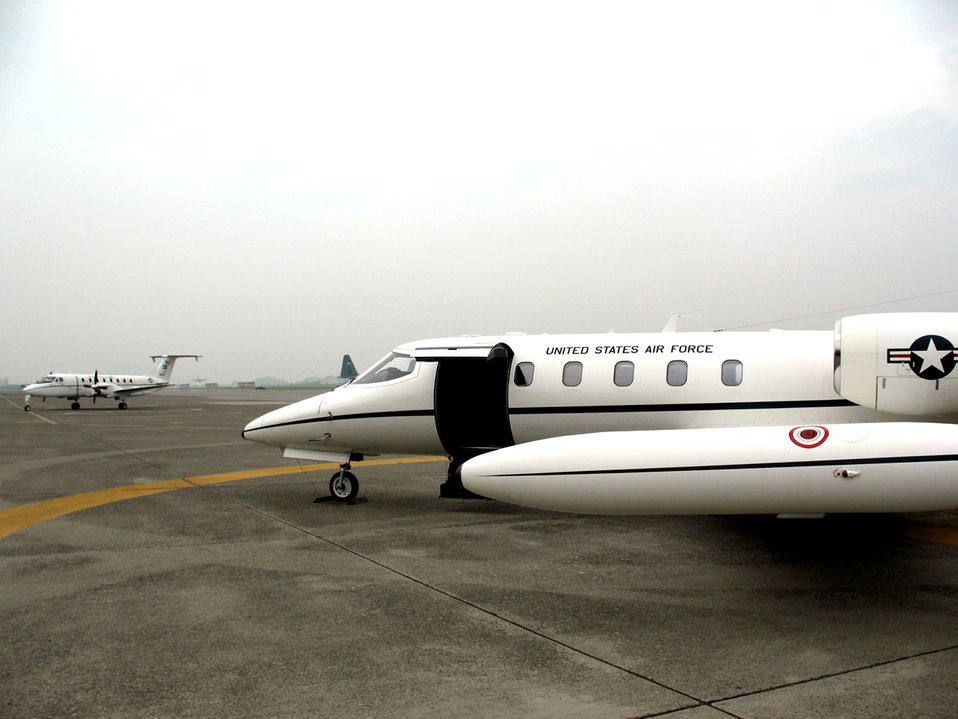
C-21 makes final flight at Yokota

The C-12J Huron (left) arrives as the C-21 transport jet prepares to leave after serving for 21 years June 29 on Yokota Air Base, Japan. The C-12 is roomier than its predecessor, and has the ability to carry more people and land in more remote areas.